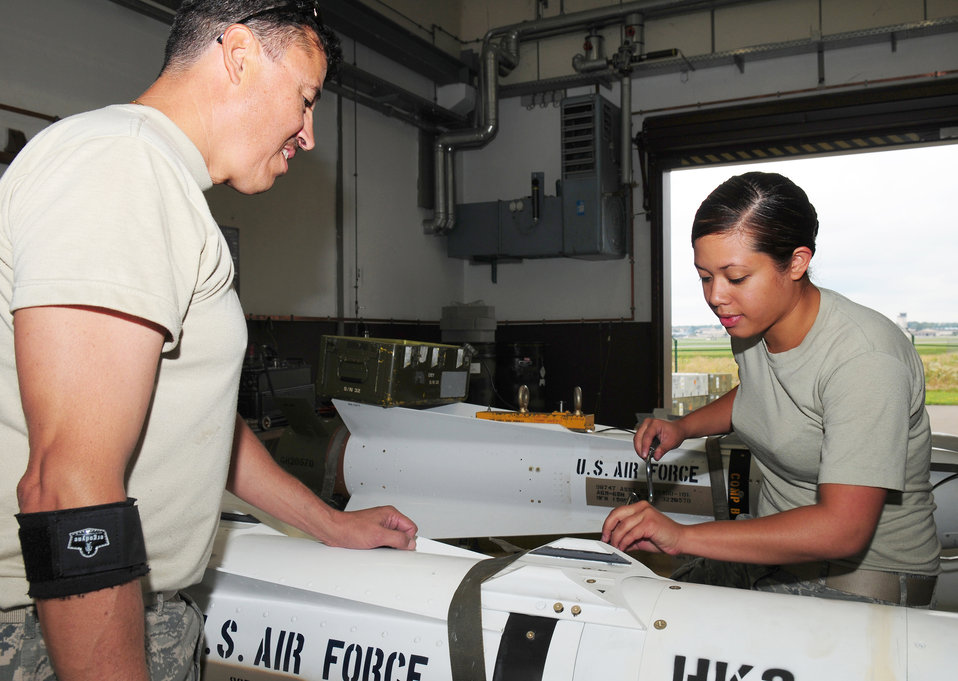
Missile retrofit provides better accuracy, saves Air Force money

Master Sgt. Eugene Rinaldi (left) and Airman 1st Class Ritchlyn Fryman remove the guidance control section of an AGM-65 Maverick missile system for upgrades Aug. 11, 2009 at Ramstein Air Base, Germany. More than 70 missiles were enhanced with a new software circuit card which allows for more accuracy and adds an abort code for pilots. Sergeant Rinaldi is an Air Force Reserve ammunition team member. Airman Fryman is an 86th Munitions Squadron precision guided munitions crew member.